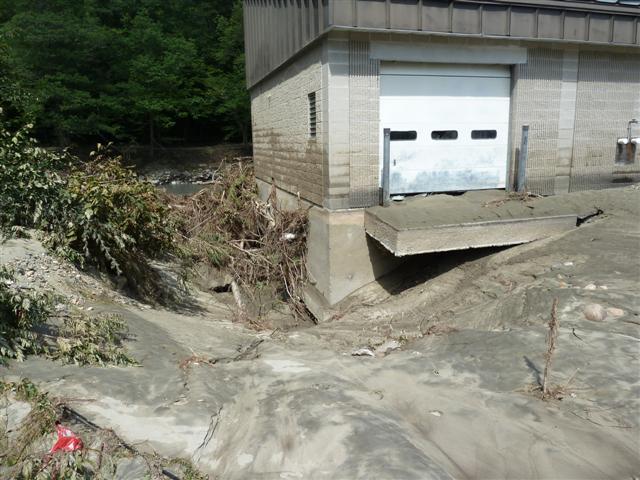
Damage at White River NFH - Bethel, VT

Damage to the foundation undermining river intake